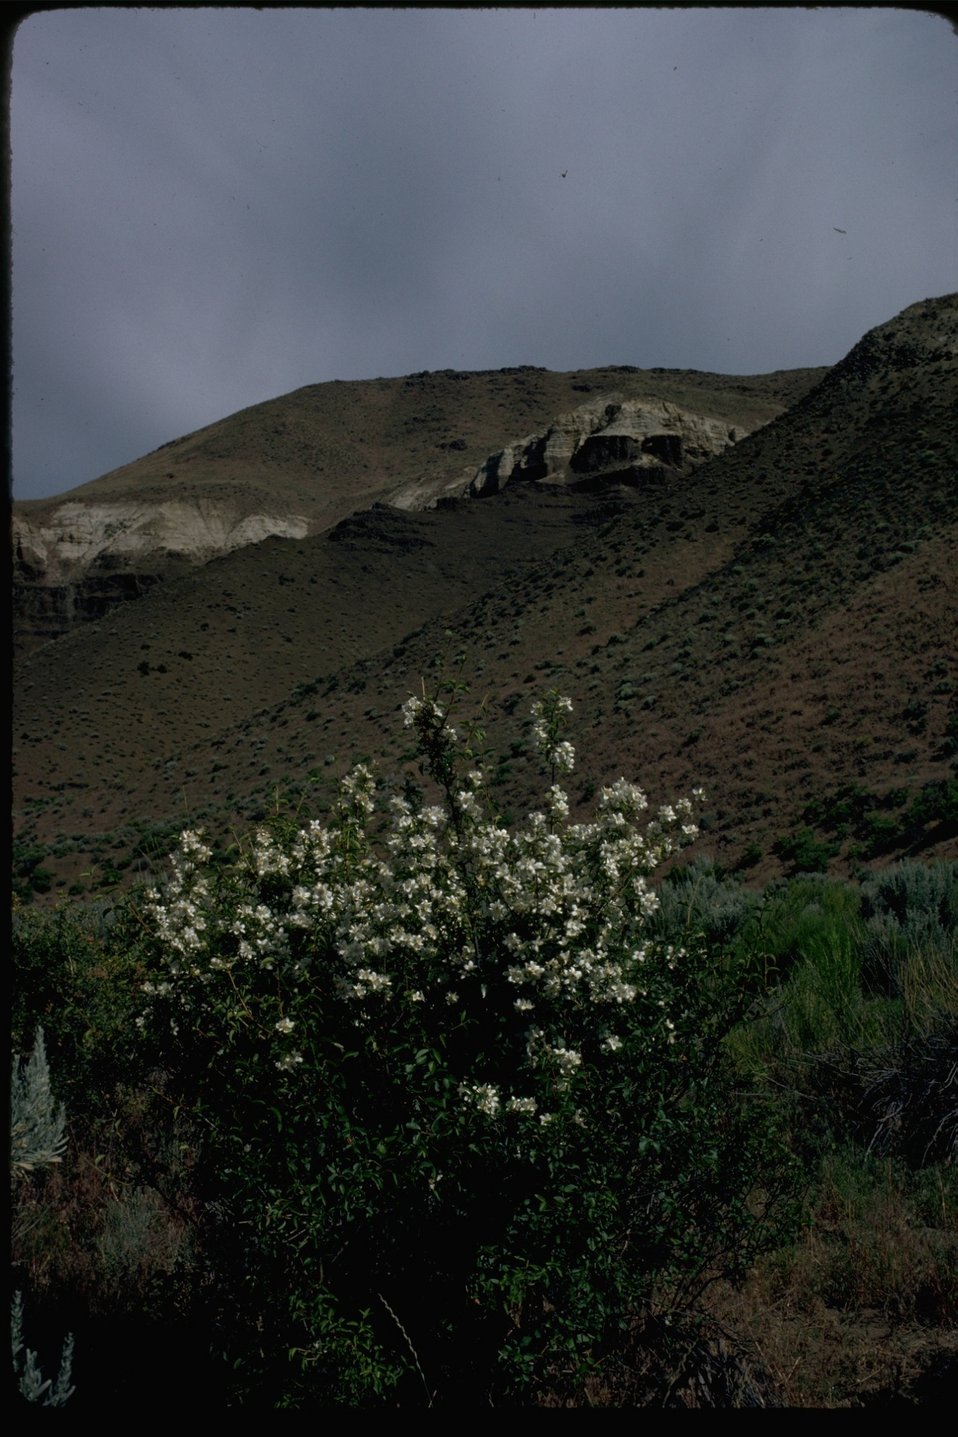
Mockorange wildflower in the scenic Dry Creek Wilderness Study Area. OR 3-53.